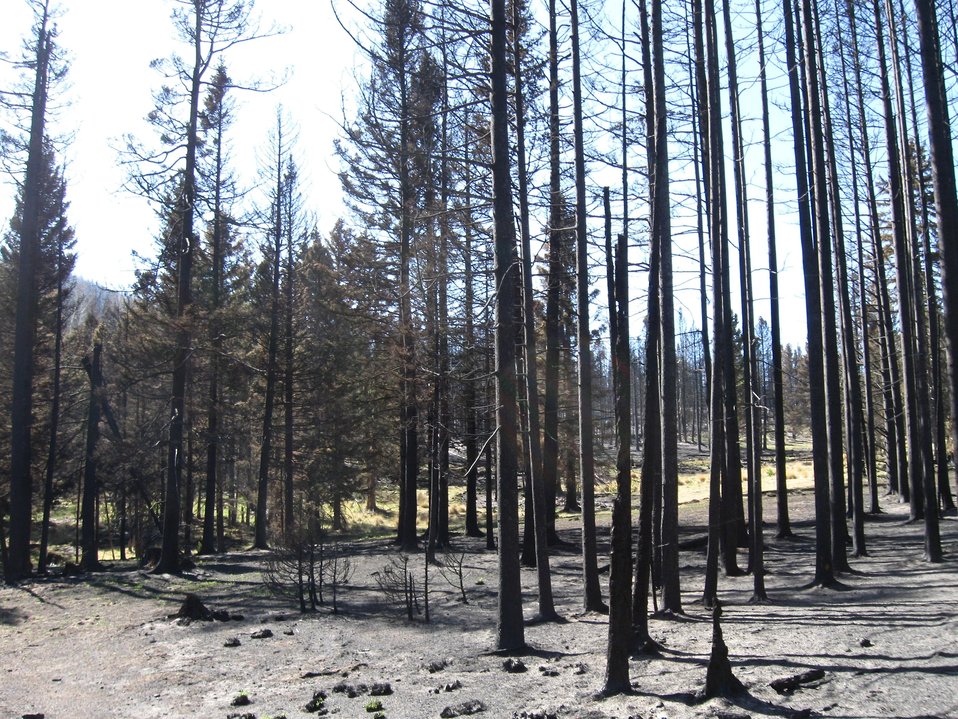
A burned out section of forest at the Thompson Ridge Fire in the Sante Fe National Forest approximately 10 miles north of Jemez, NM began on May 31, 2013 by human ignition has consumed over 29, 903 acres.